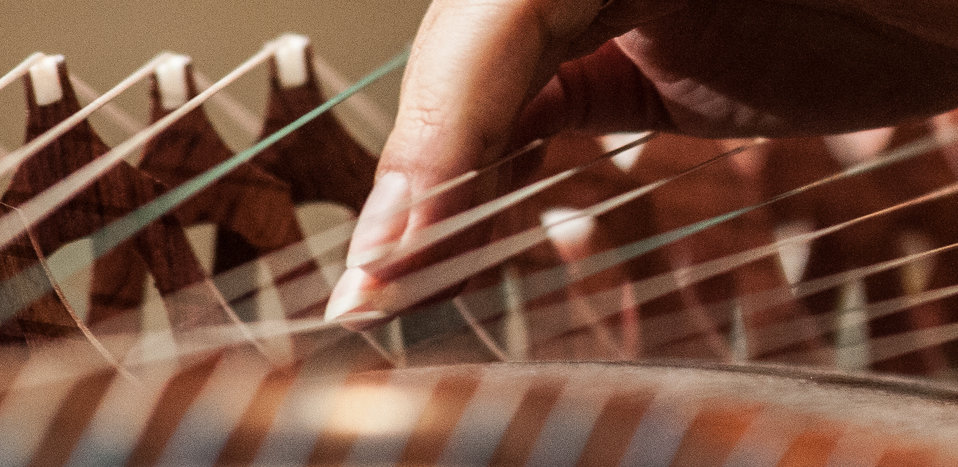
Washington Chinese Traditional Orchestra’s Huilan Chen gives a solo performance of “Gao Shan Liu shui” and “Yi zu Wu qu” on the Guzheng, an ancient type of musical instrument, during the U.S. Department of Agriculture (USDA) Asian Pacific American Heritage Month Observance, at the USDA headquarters, Whitten Building patio, in Washington, D.C., on Thursday, May 23, 2013. This year’s theme is “Building leadership; Embracing the Cultural Values and Inclusions.”